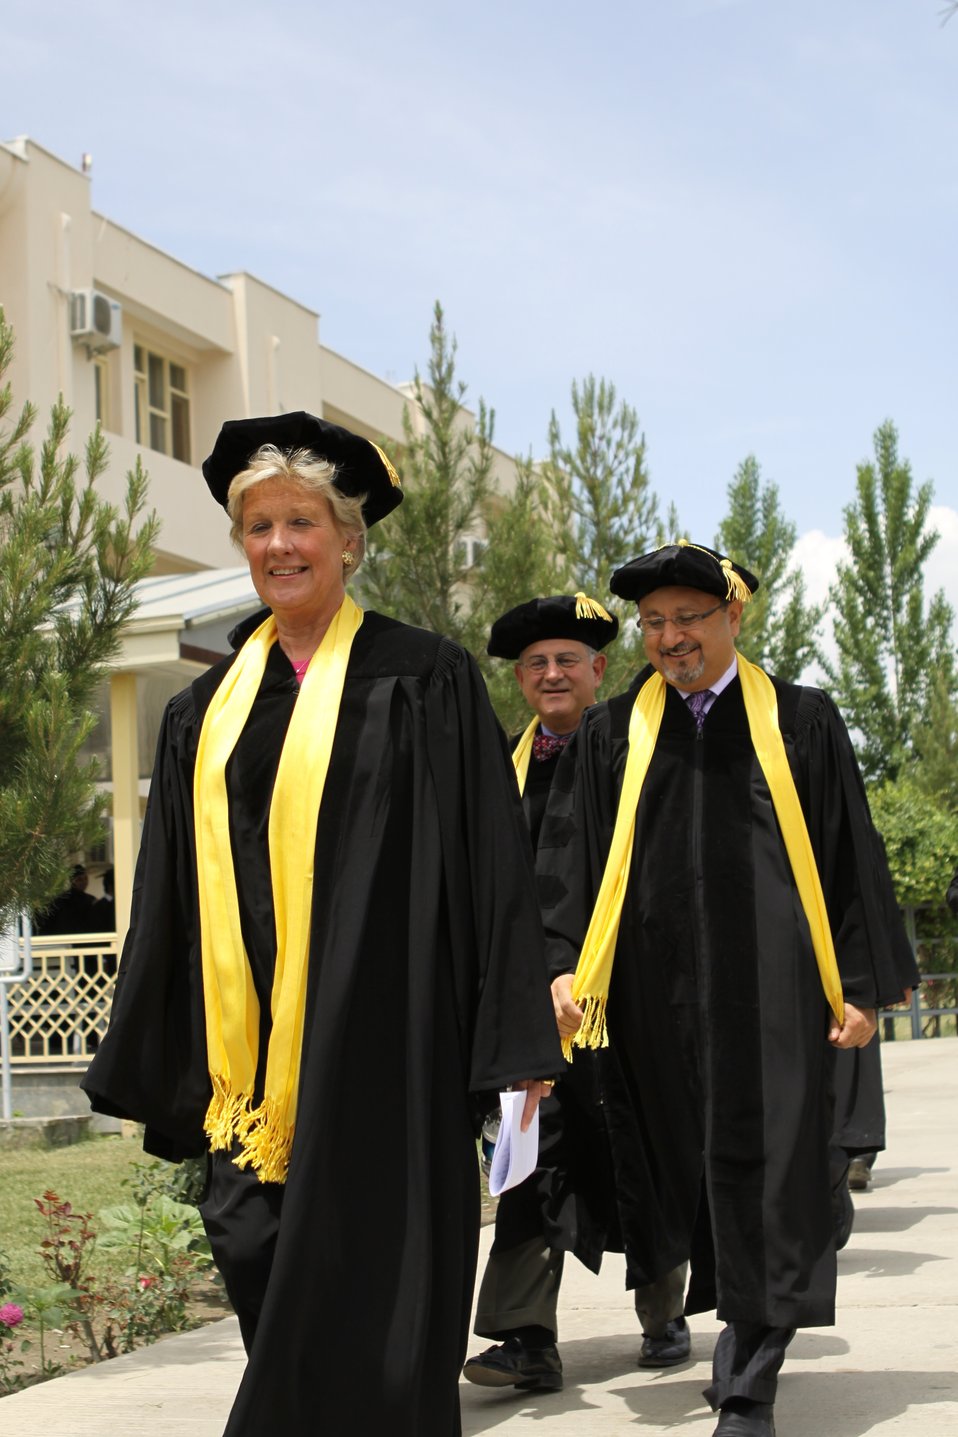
100526 AUAF Graduation 098